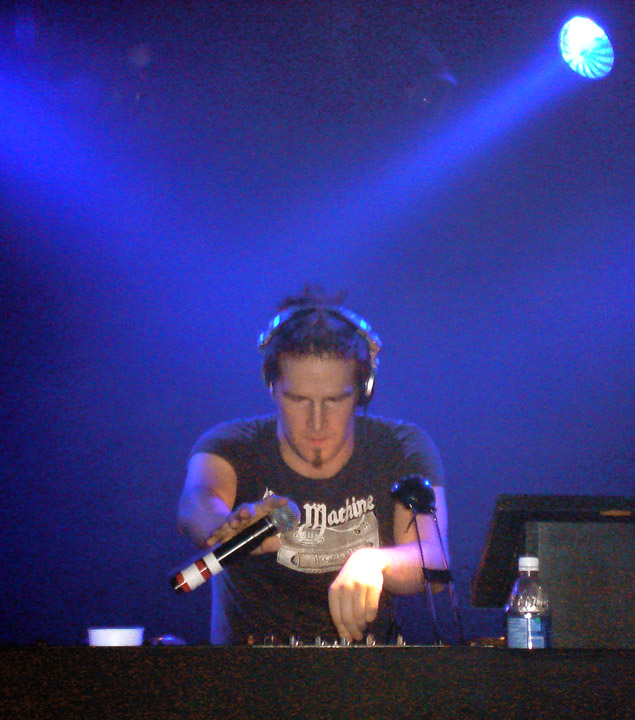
A live hour-and-a-half DJ set at The Docks, Toronto, ON, Canada. All ages party, UNITY 2007